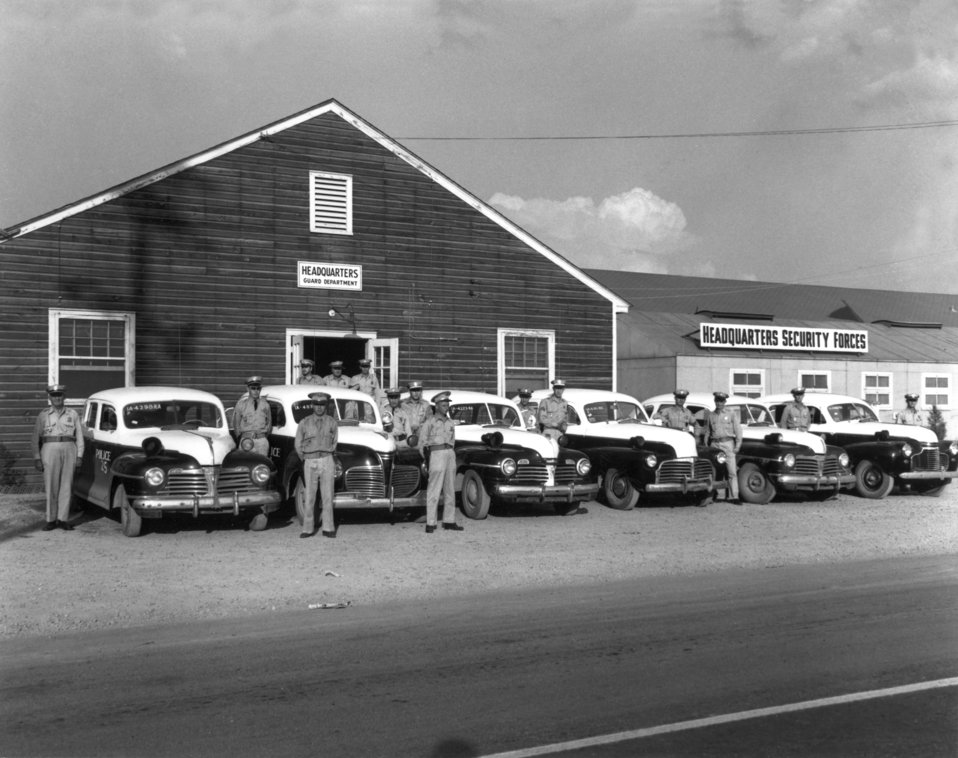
Police Department – Car Lineup

1117 DOE photo by Ed Westcott Oak Ridge Tennessee 1945